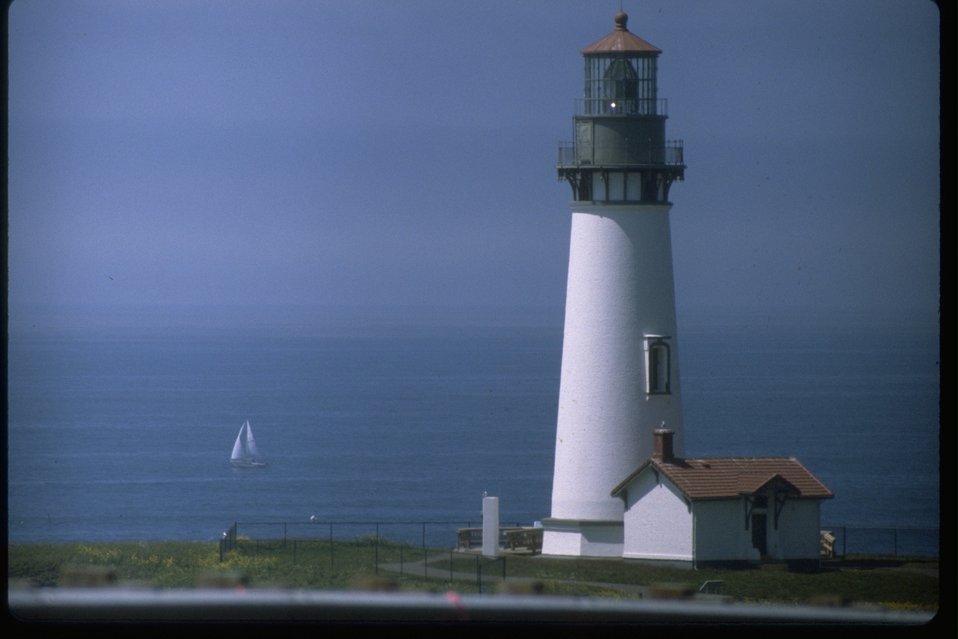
Horizontal shot of Yaquina Head lighthouse with a sailboat off shore.